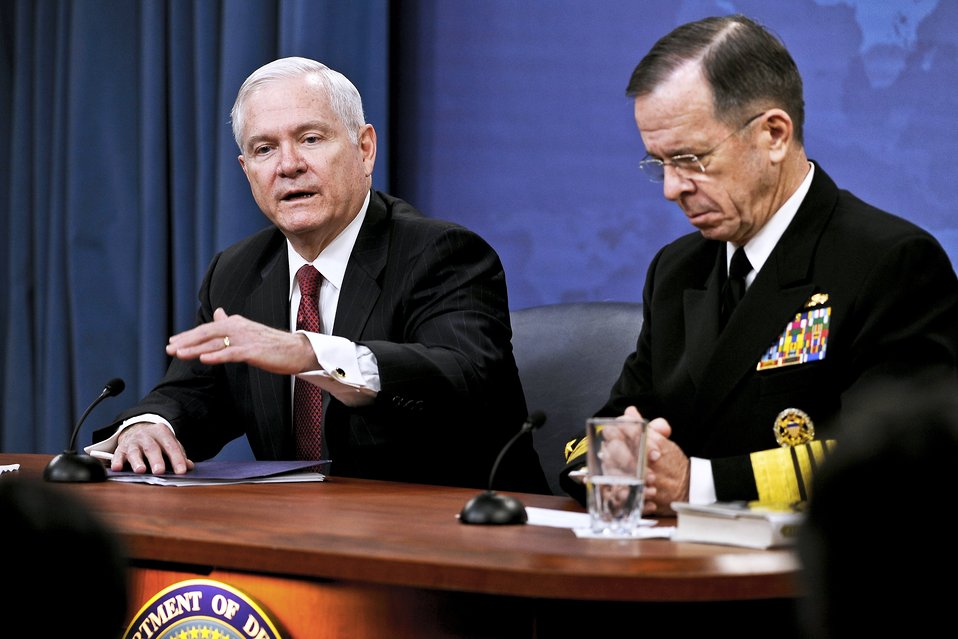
Defense Secretary Robert M. Gates and Chairman, Joint Chiefs of Staff Admiral Michael Mullen hold a press briefing

Defense Secretary Robert M. Gates makes a point during a Jan. 6, 2011, Pentagon news conference with Navy Adm. Mike Mullen, the chairman of the Joint Chiefs of Staff.